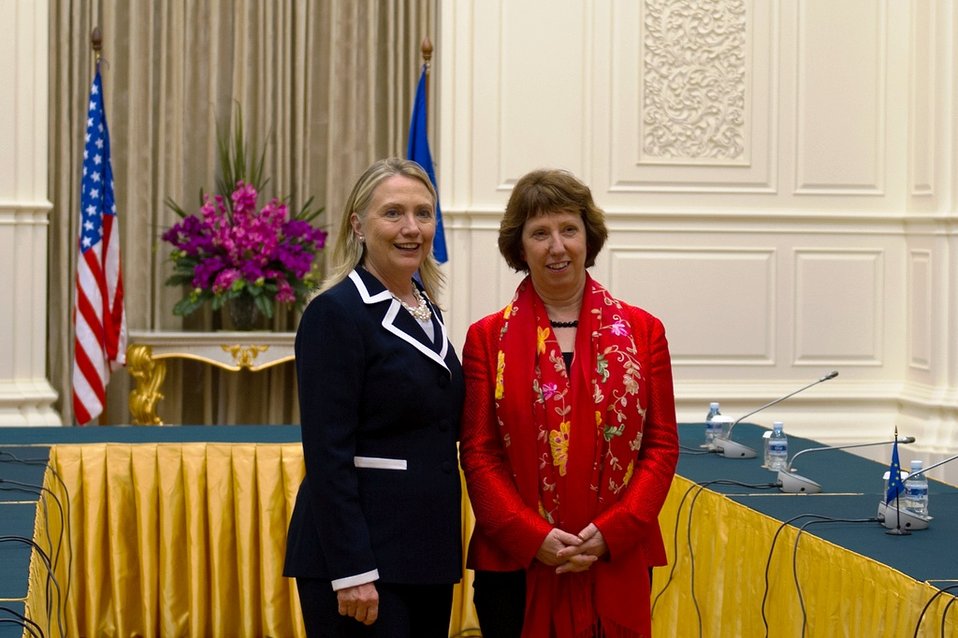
Secretary Clinton Meets With EU High Representative Ashton

U.S. Secretary of State Hillary Rodham Clinton meets with EU High Representative Catherine Ashton in Phnom Penh, Cambodia, on July 12, 2012.